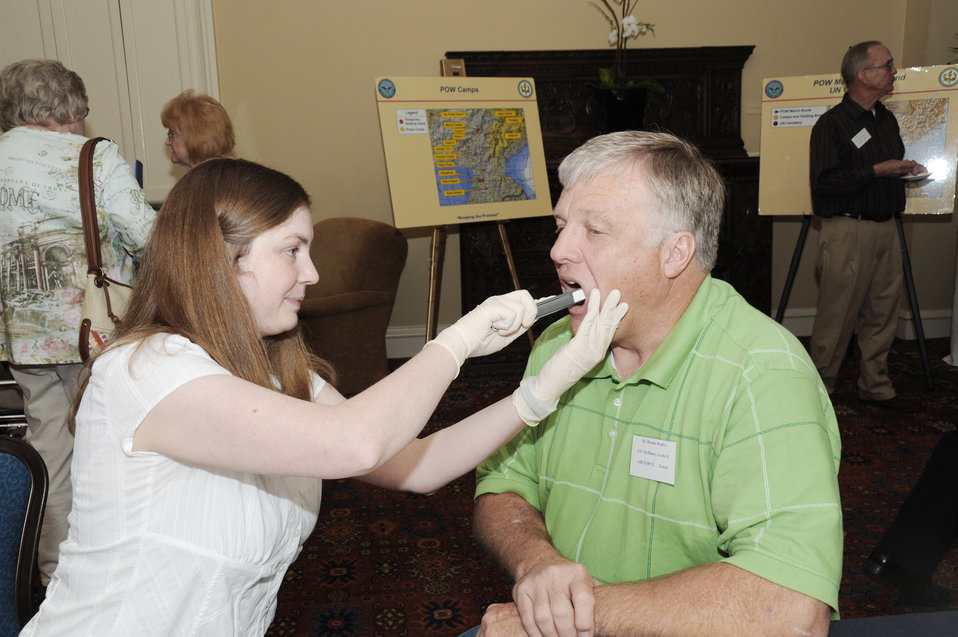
Defense POW/Mission Personnel Office staff puts pieces together for loved ones

Bennie Renfro gives a DNA sample during a family update meeting sponsored by the Defense Prisoner of War/Missing Personnel Office March 20, 2010, in San Antonio. Mr. Renfro's nephew, Airman 1st Class Leslie McHaney has been missing from the Korean War for more than 30 years.